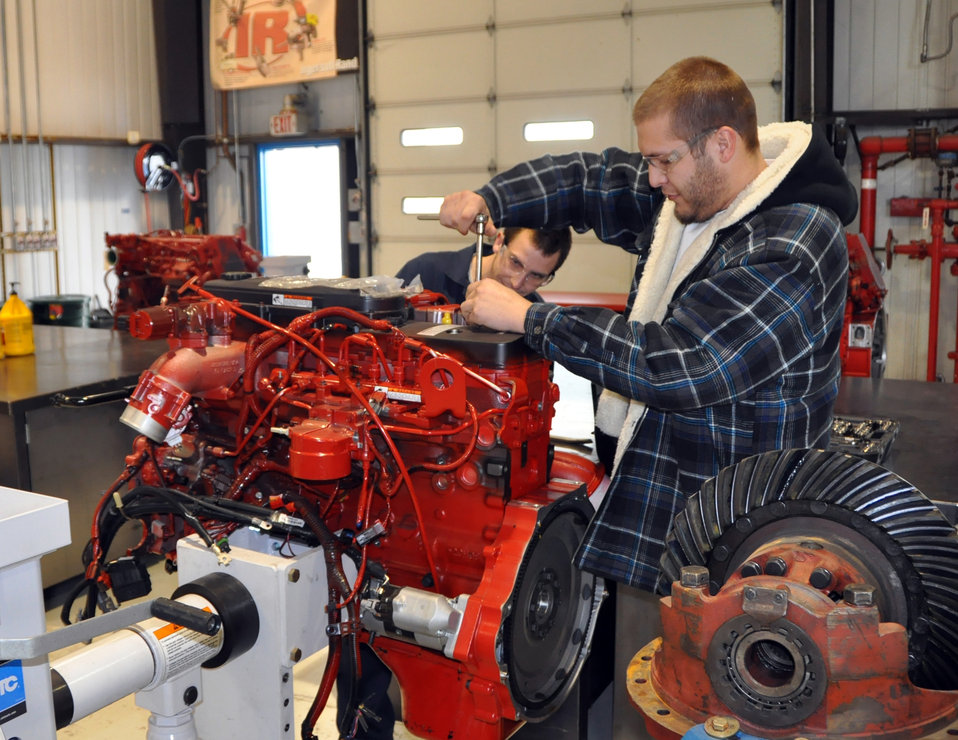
Green businesses

Todd Stretars (rear) and Martin Peck make adjustments to a Cummings 6.7 Turbo Diesel engine. Both students are enrolled in American River College's clean diesel technology program at the former Mather Air Force Base in Sacrament, Calif.